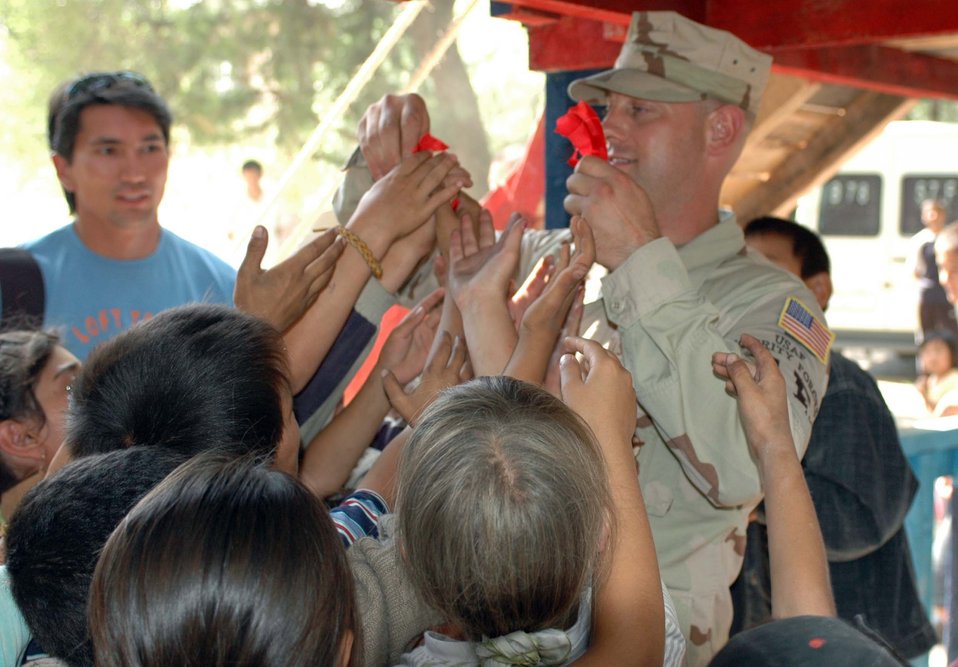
376th ESFS dedicates new children's playground

Tech. Sgt. Tony Turner, 376th Expeditionary Security Forces Squadron, passes out pieces of the ribbon cut during the dedication ceremony for a new children's playground at the Oktobersky Village, Kyrgyzstan, School #1. Members from the 376th Air Expeditionary Wing at Manas Air Base, Kyrgyzstan, were on hand to dedicate the playground, built by members of the 376th ESF and Civil Engineer squadrons. Sergeant Turner is deployed from the 917th Security Forces Squadron, Barksdale Air Force Base, La.